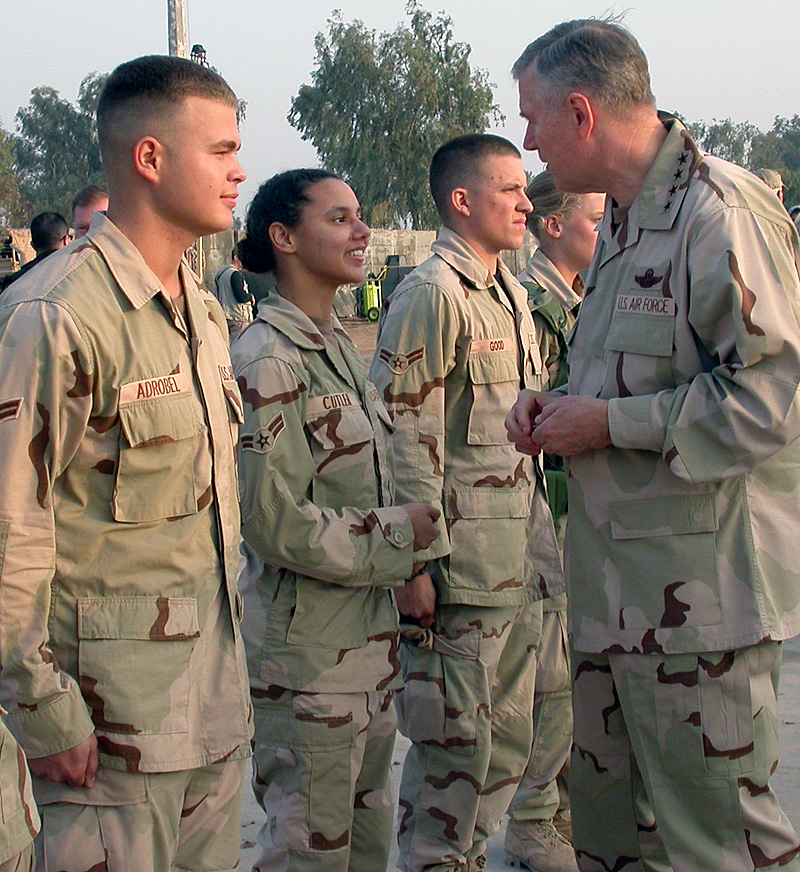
Stars tour Iraq for holidays

BALAD AIR BASE, Iraq -- Airman 1st Class Janet Cutler speaks briefly with Gen. Richard Meyers, chairman of the Joint Chiefs of Staff, on Dec. 17. Myers brought a United Service Organizations tour here to entertain airmen and soldiers. Cutler is assigned to Detachment 1, Expeditionary Medical Squadron and deployed from Offutt Air Force Base, Neb.